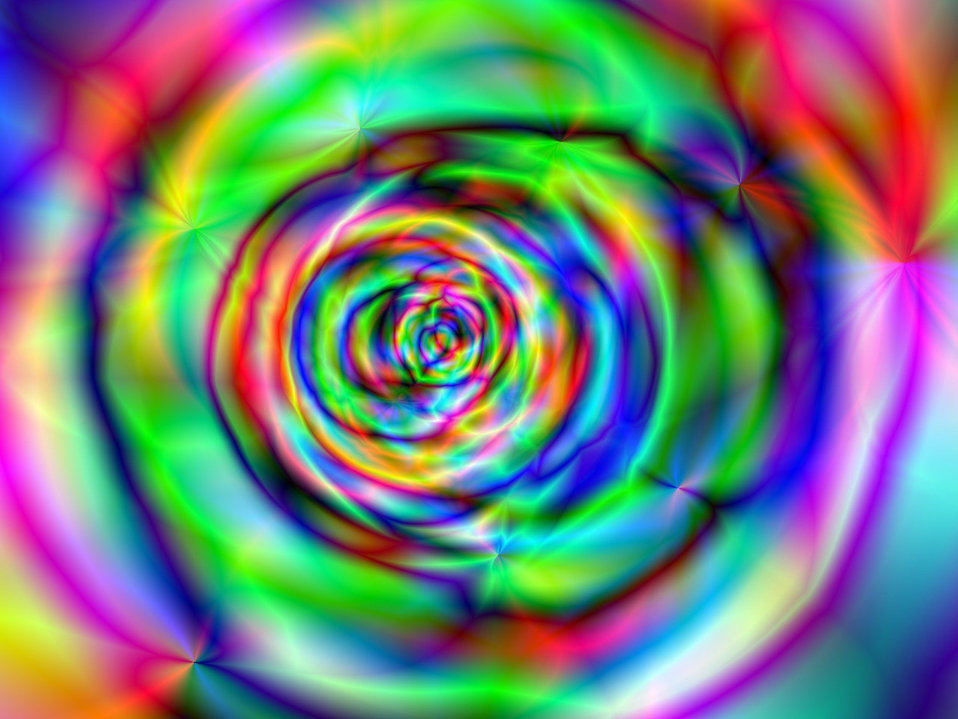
Psychedelic rose

A neon psychedelic rose.